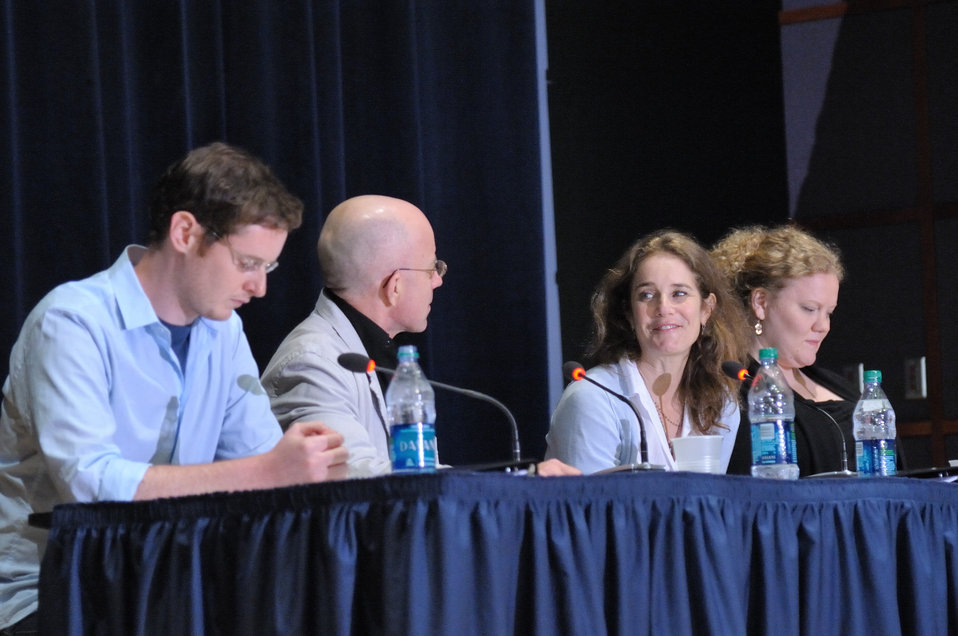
Actors2 - APP Aug 2011

Actors perform at NIDA’s Addiction Performance Project on the NIH Campus, Aug 5; (L-R): Bob Braswell, Arliss Howard, Debra Winger, Sara Waisanen